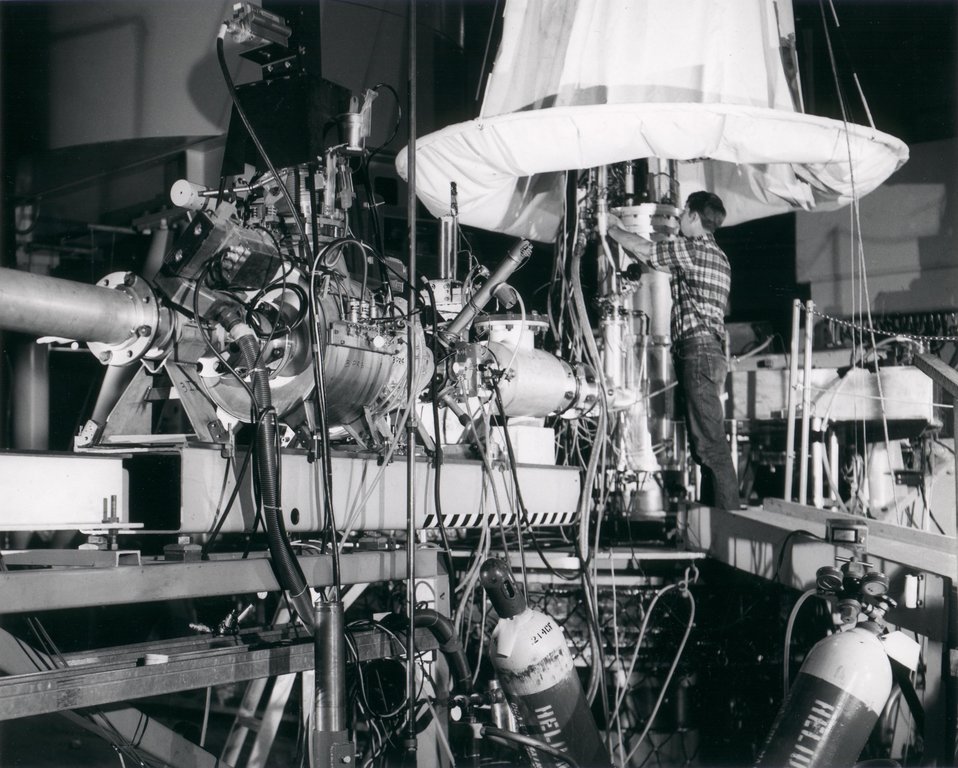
Technician working in the target area in End Station A of the Stanford Linear Accelerator (SLAC)--the business end of the accelerator complex.